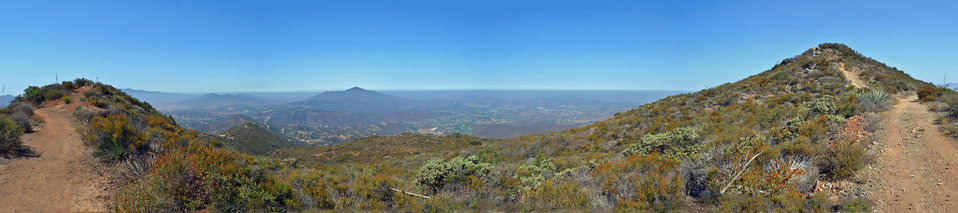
Views from atop the peak of McGinty Mountain, San Diego NWR

Atop the peak of McGinty Mountain, looking Southwest to Miguel Mtn, both located on San Diego NWR.